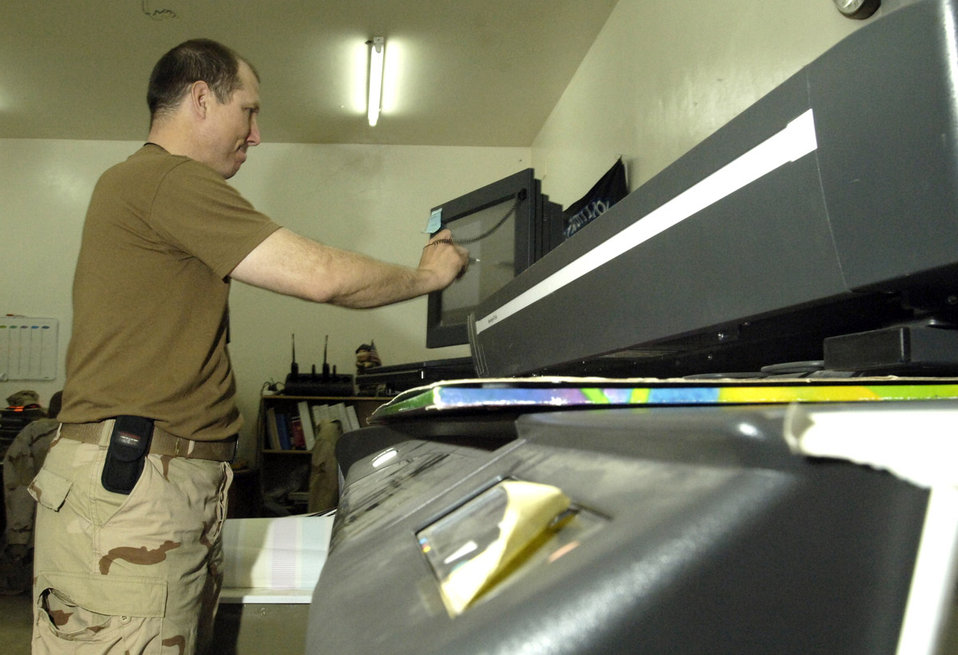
Drawing up plans

BALAD AIR BASE, Iraq (AFPN) -- Master Sgt. Bob Padick scans a document to be added to the continuity book. Sergeant Padick is with the 732nd Expeditionary Civil Engineer Squadron.